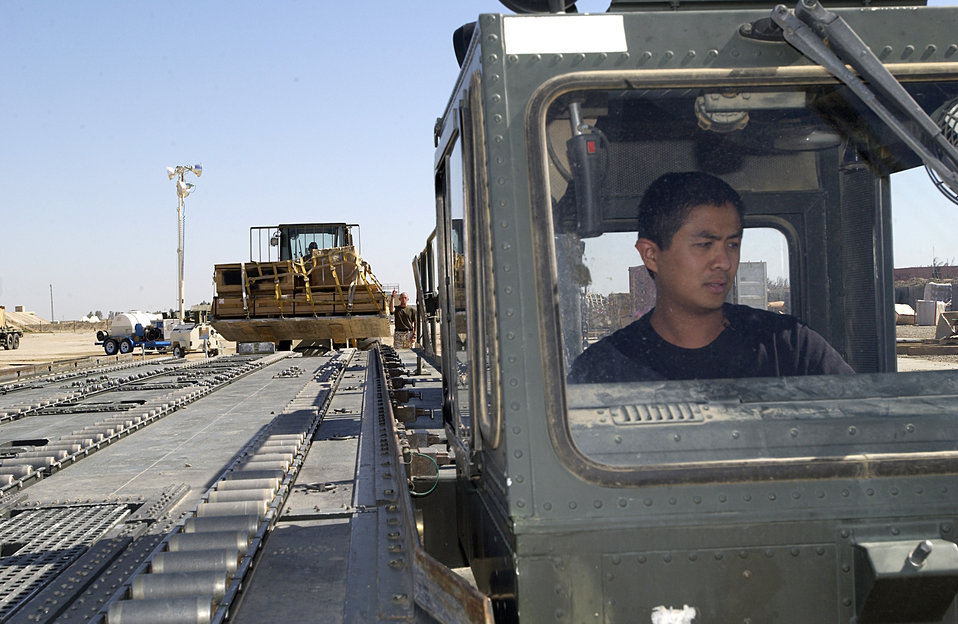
Loader guy

TALLIL AIR BASE, Iraq -- Senior Airman Mark Dacanay operates a K-loader while fellow aerial transportation operations center Airmen load a pallet for transport here April 26. Airman Dacanay is an aerial transportation operations center Airman with the 407th Operations Support Squadron. ATOC Airmen are resposible for loading, unloading and preparing aircraft for flights.